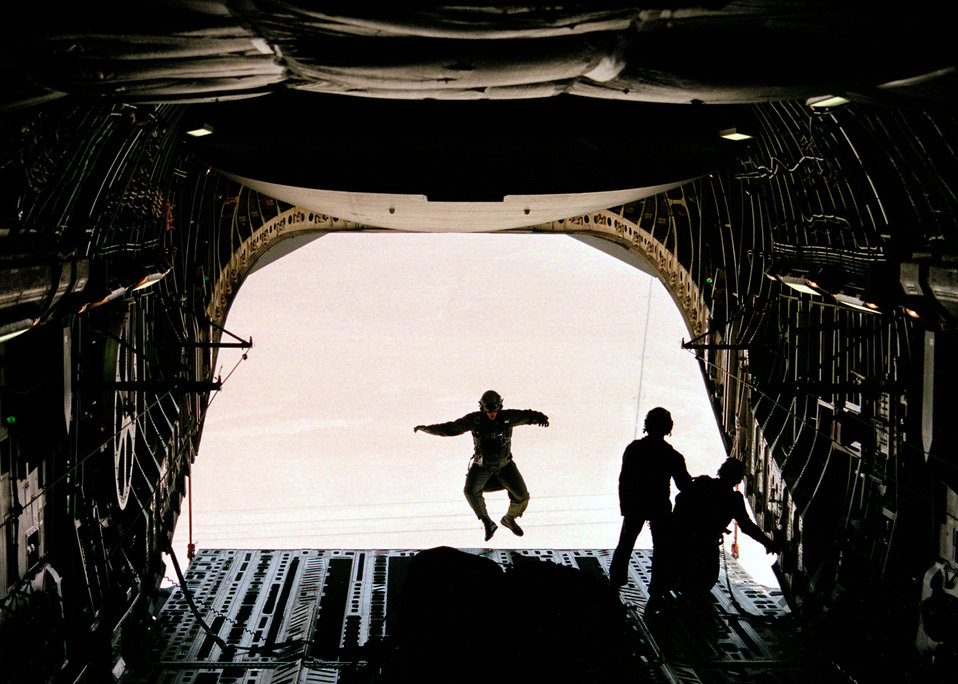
C-17 test team conducts airdrop tests

EDWARDS AIR FORCE BASE, Calif. (AFPN) --Testers at here, conduct egress training during earlier test missions aboard the C-17 Globemaster III. An Air Force test team is working with soldiers at Fort Bragg, N.C., to conduct egress and airdrop tests designed to improve the aircraft's support of real-world military missions.